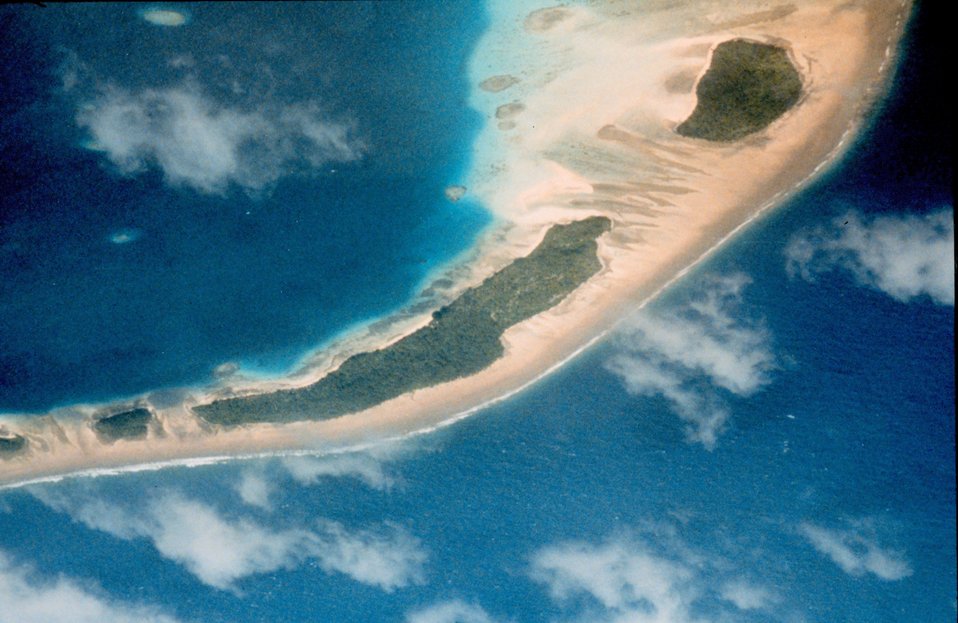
Pacific atoll with inner lagoon showing coral heads.